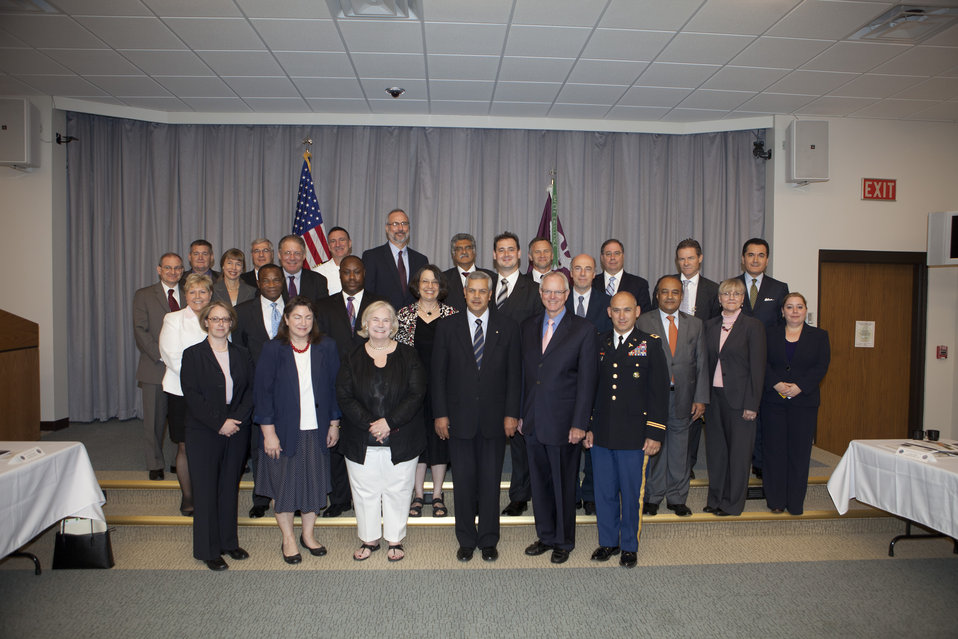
Ambassador Kennedy With Ambassadors Posted to Switzerland

Ambassador Laura Kennedy, U.S. Special Representative for Biological Weapons Convention (BWC) Issues, poses for a photo with Ambassadors posted to Switzerland, including the current BWC Chairman, Algerian Ambassador Delmi, at the National Interagency Biodefense Campus at Ft. Detrick in Frederick, Maryland, on July 24, 2012. [DTRA/DOD photo]